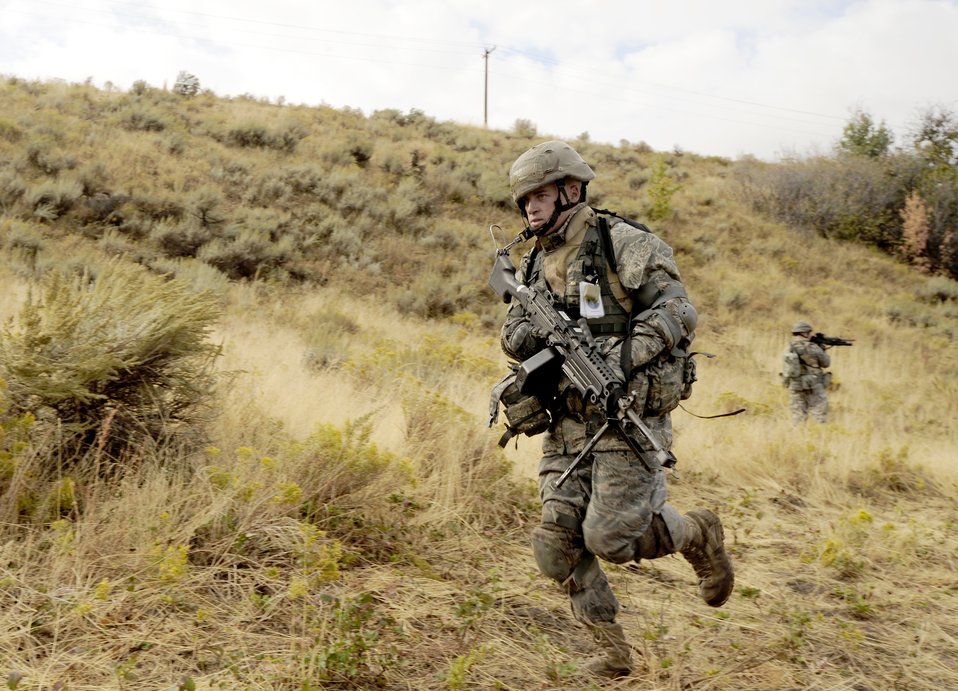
Operational Readiness Exercise 10-4

Airman 1st Class Jared Hughes runs to set up a perimeter during Operational Readiness Exercise10-4 Oct. 7, 2010, at Hill Air Force Base, Utah. Airman Hughes is assigned to the 419th Security Forces Squadron.